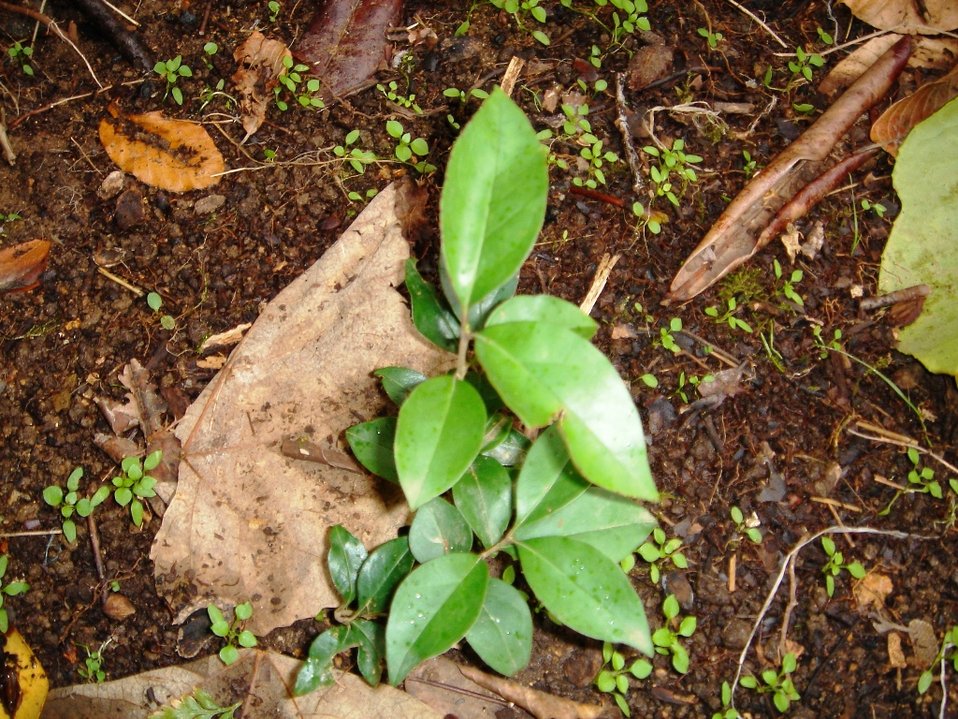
Ligustrum japonicum